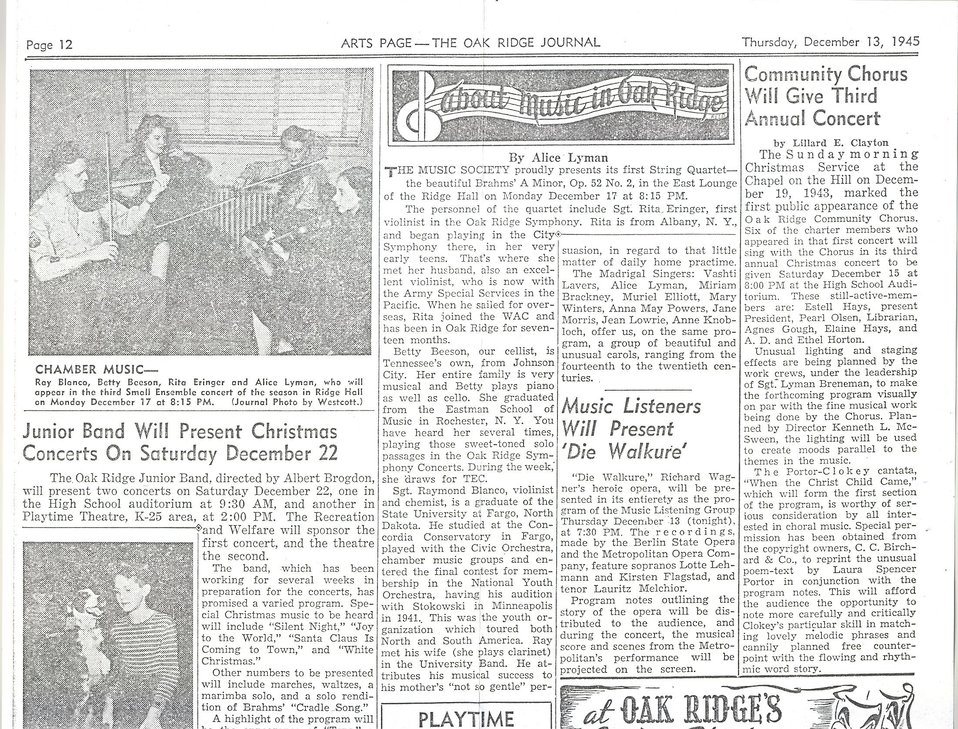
Oak Ridge Journal Dec 13, 1945 about Group of Four Musicians